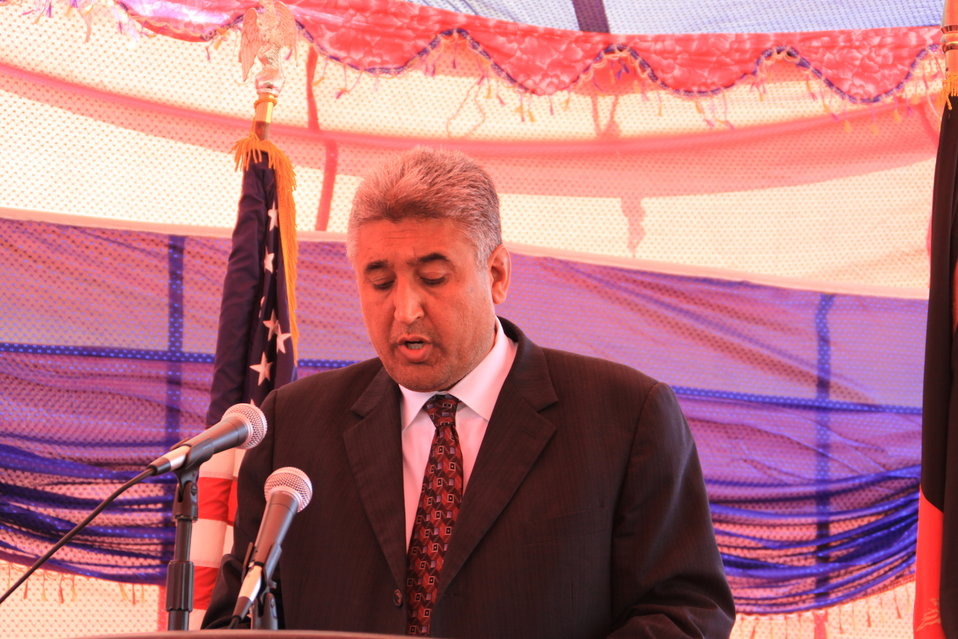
Badam Bagh Farm